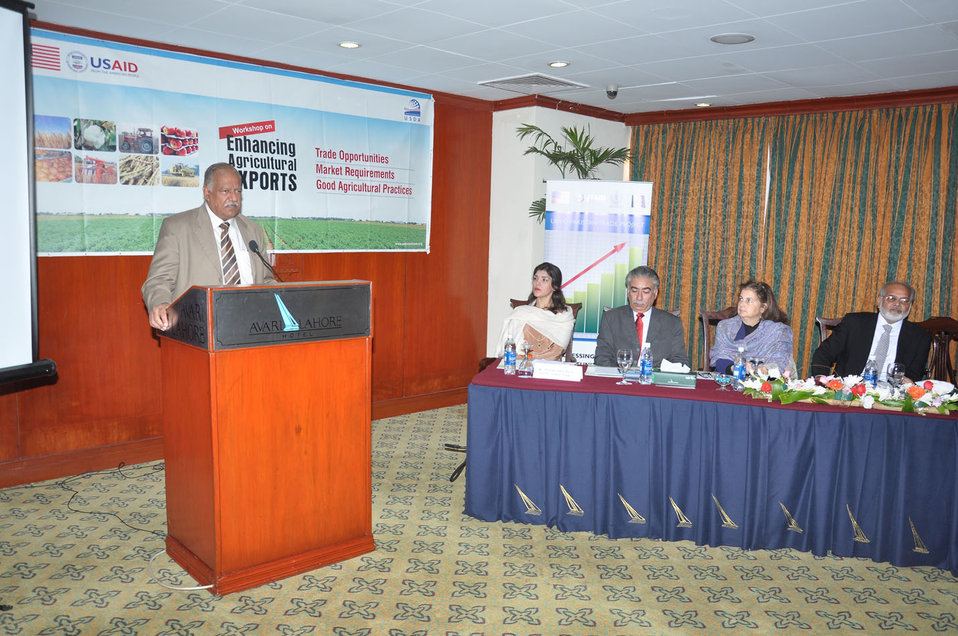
Distinguished guest speaking at the G workshop organized by USAID Trade Project.